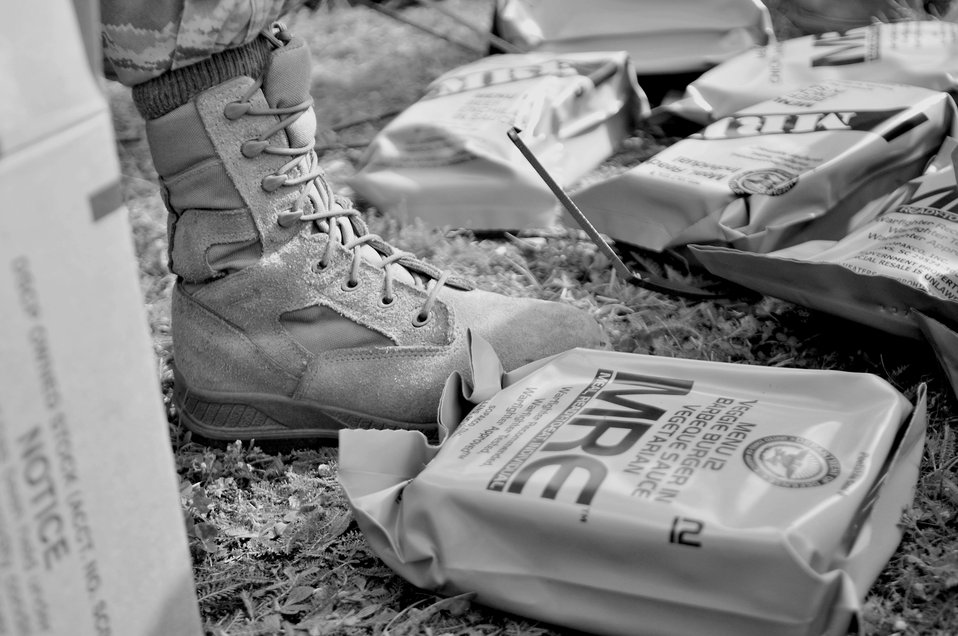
Ramstein AB medics

Medical technicians from the 86th Medical Group participating in a week of mobile aeromedical staging facility training take a few minutes for a Meal, Ready to Eat lunch Aug. 2, 2010, at Ramstein Air Base, Germany.